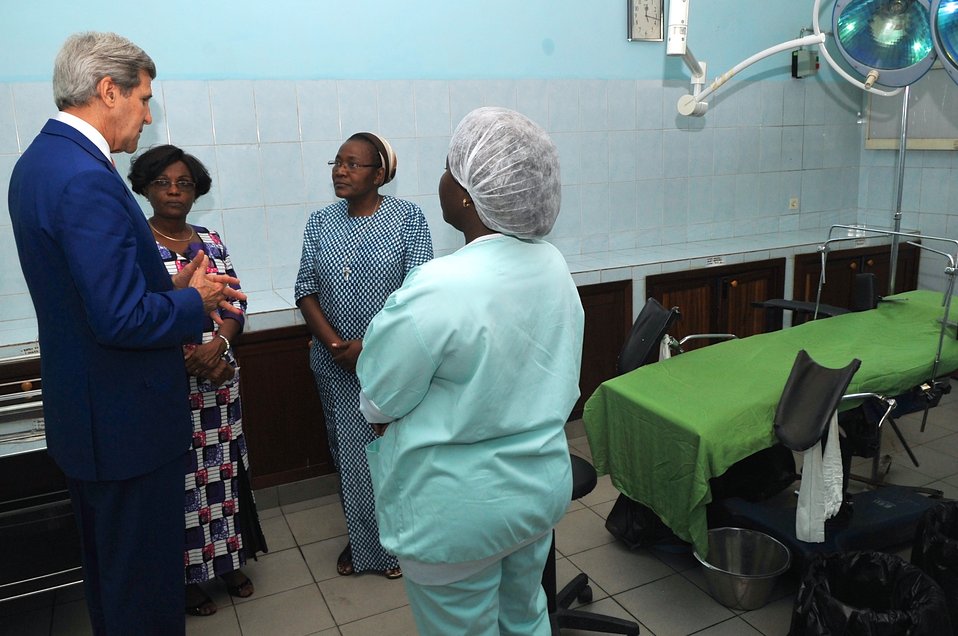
Secretary Kerry Gets Briefing at USAID-Funded Fistula Clinic in Kinshasa

U.S. Secretary of State John Kerry gets briefed by employees of St. Joseph's Hospital about their USAID-funded Fistula Clinic during a visit to the facility in Kinshasa, Democratic Republic of Congo, on May 4, 2014.